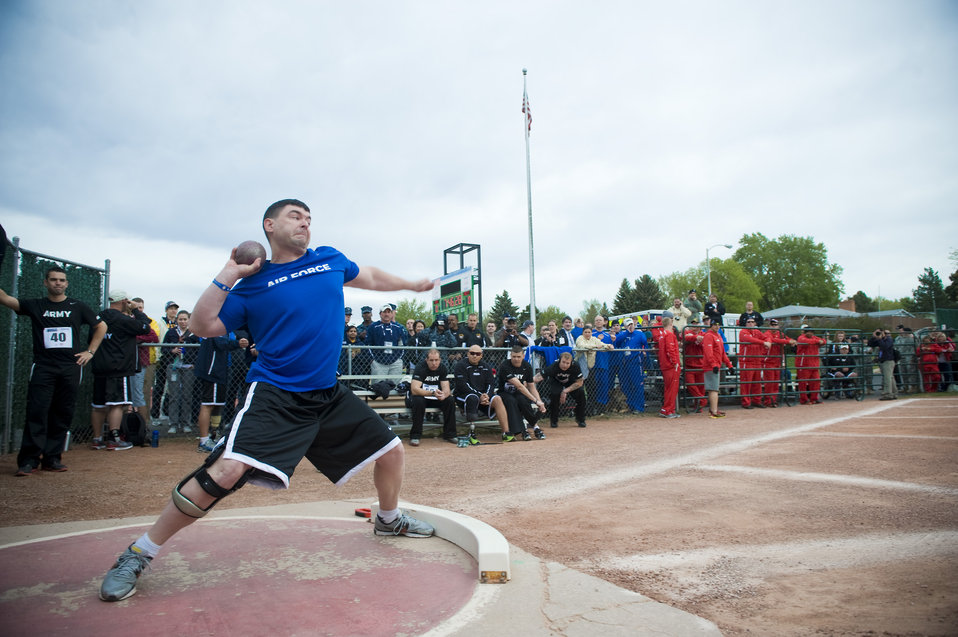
Warrior Games Track and Field

Air Force athlete Matthew Bilancia throws his first shot put of the day during the track and field competition May 17, 2011, at the 2011 Warrior Games in Colorado Springs, Colo. The track and field events kicked off the games, which continue throughout the week.